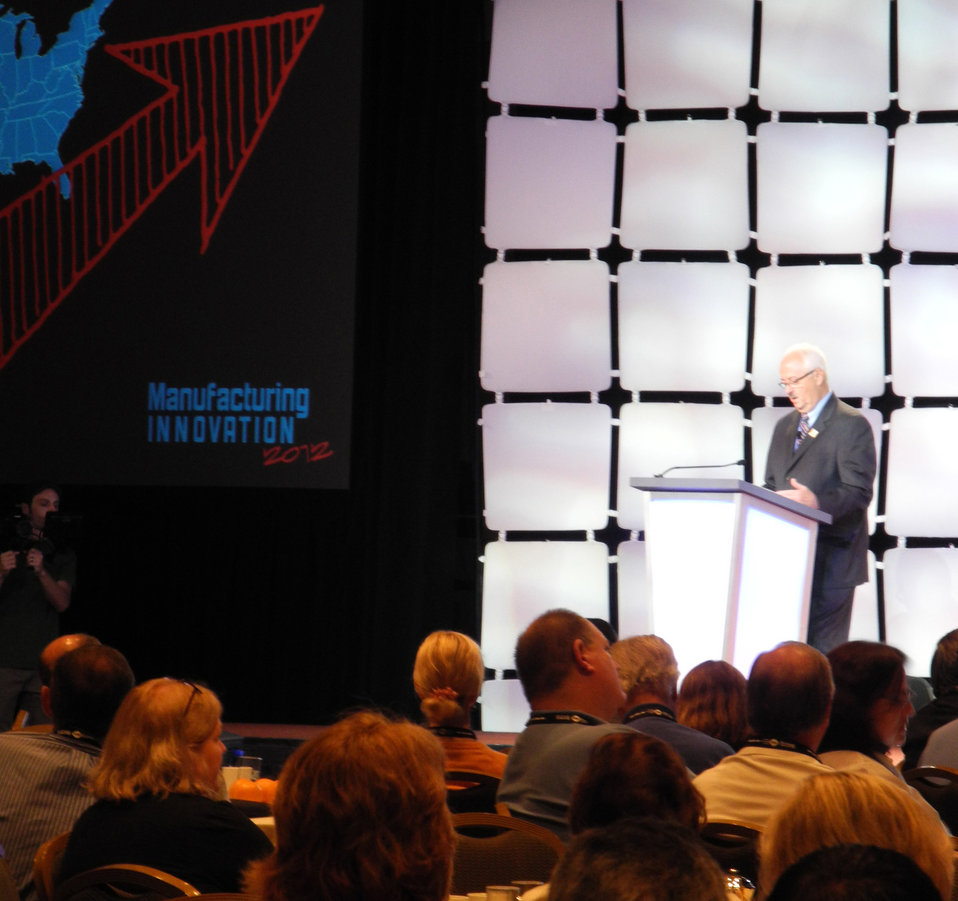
Manufacturing Innovation 2012

Roger Kilmer, director of NIST’s Manufacturing Extension Partnership Program speaks to more than 800 manufacturers and other industry experts at the Manufacturing Innovation 2012 conference. The annual event helps U.S. companies learn critical tools to help them constantly innovate and improve their products to compete and win in the global marketplace.